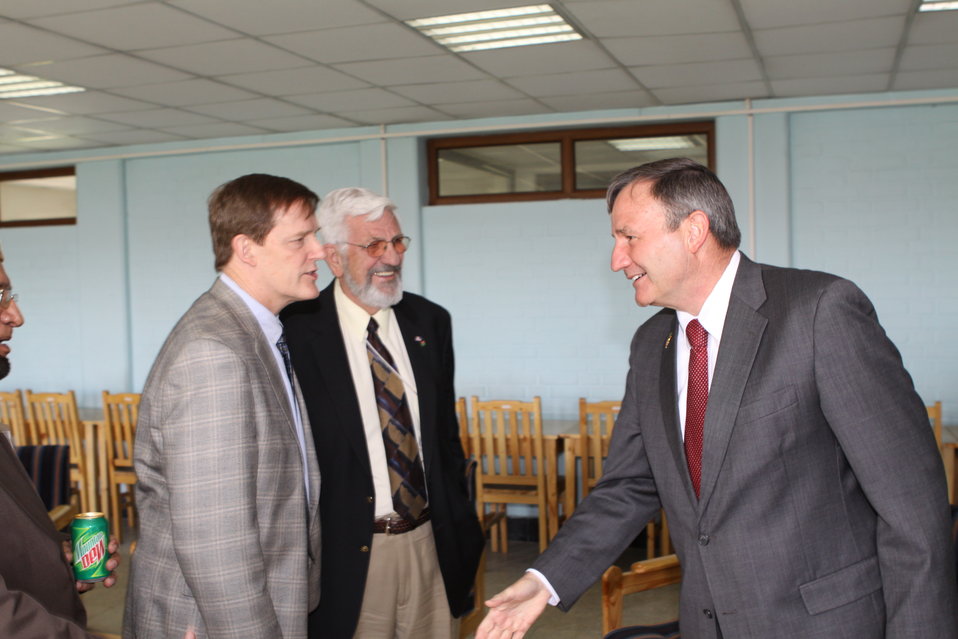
100526 AUAF Graduation 030